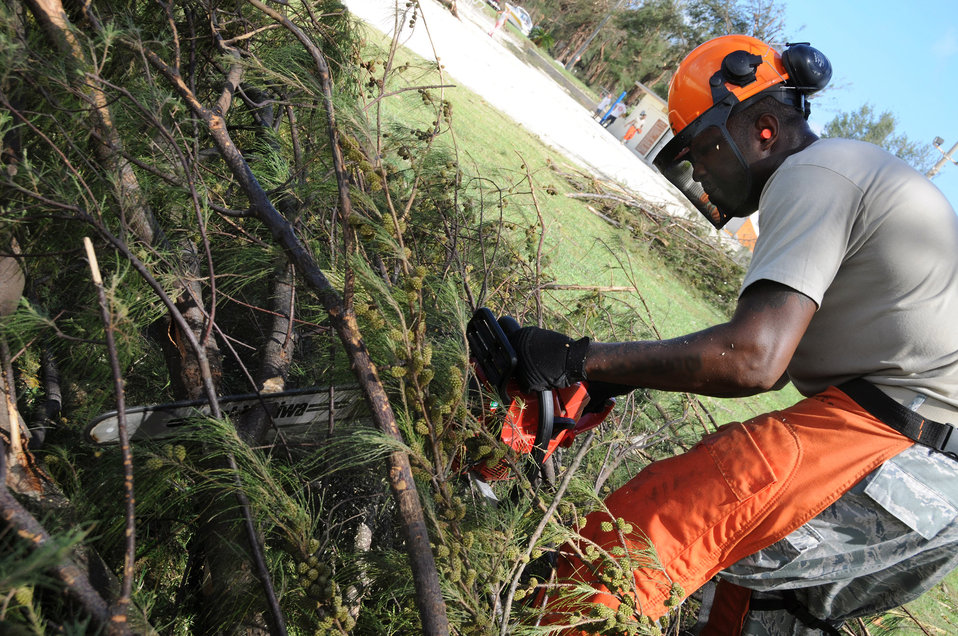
Airmen clean up after typhoon

Tech. Sgt. Dwayne Jones uses a chainsaw to cut fallen branches into smaller pieces at the Okuma Recreation Area Sep. 2, 2010. More than 100 Airmen volunteered to help clean up the debris left when Typhoon Kompasu struck Okinawa Aug. 31.